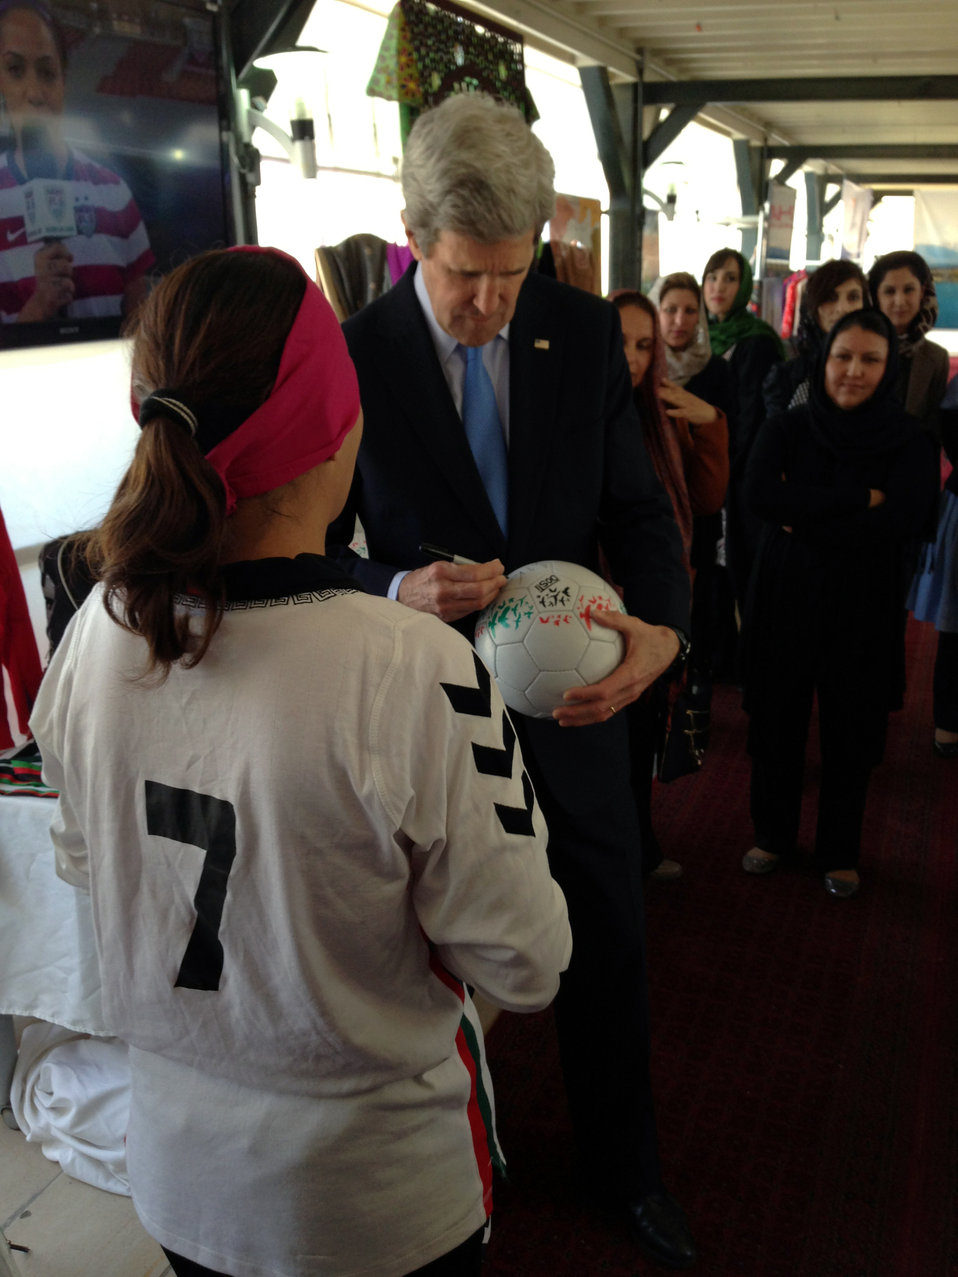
Secretary Kerry Tours Women’s Entrepreneurship Showcase in Kabul

U.S. Secretary of State John Kerry signs a soccer ball for Zahra Mahmoodi, captain of the Afghan women's national soccer team, during a tour of local businesses in Kabul, Afghanistan on March 26, 2013.